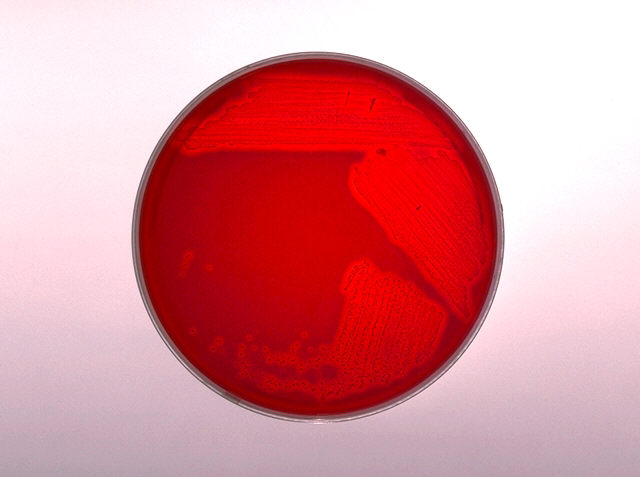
Blood agar plate culture of Corynebacterium haemolyticum.